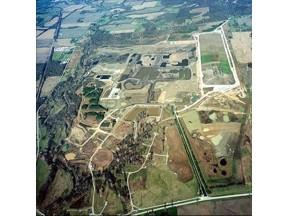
Fernald Site

An aerial photo of the Fernald Site in Ohio taken in 2006 after major cleanup activities were completed. DOE will manage the long term protection of the 1,050 acre site as an undeveloped nature and wildlife reserve through monitoring and sampling of the 180 wells and groundwater. In addition, DOE will operate a Groundwater Treatment Facility to safely pump and treat water to the Great Miami Aquifer.